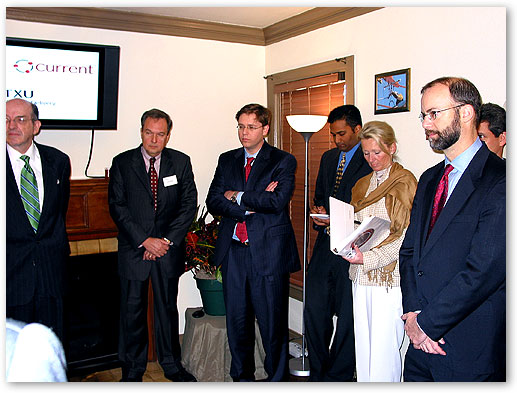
FCC Commissioners at CURRENT Communications Broadband Over Powerline demonstration in Dallas, Texas.